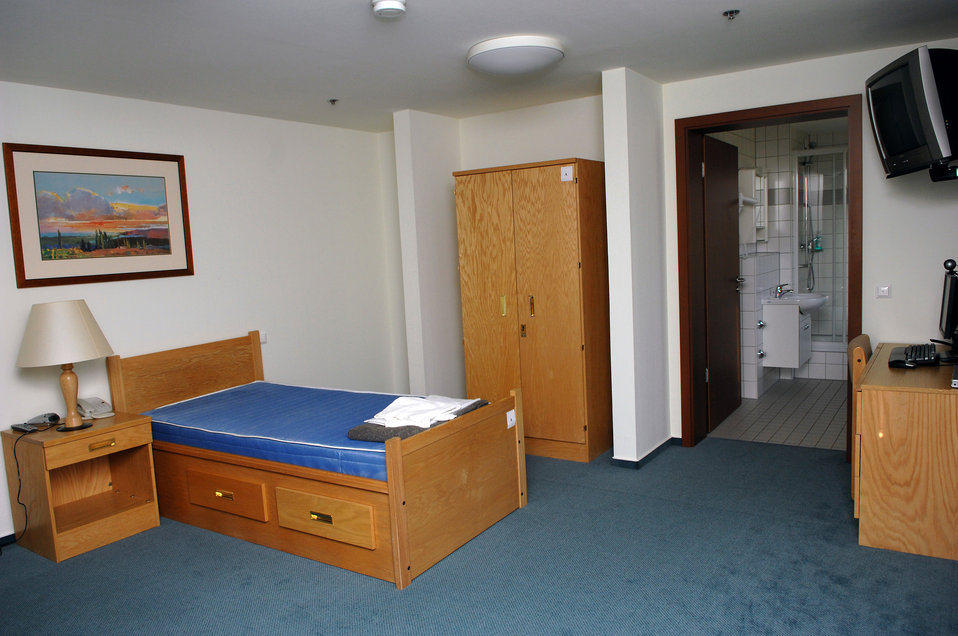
USAFE answers call of wounded warriors

Pictured is an example of a